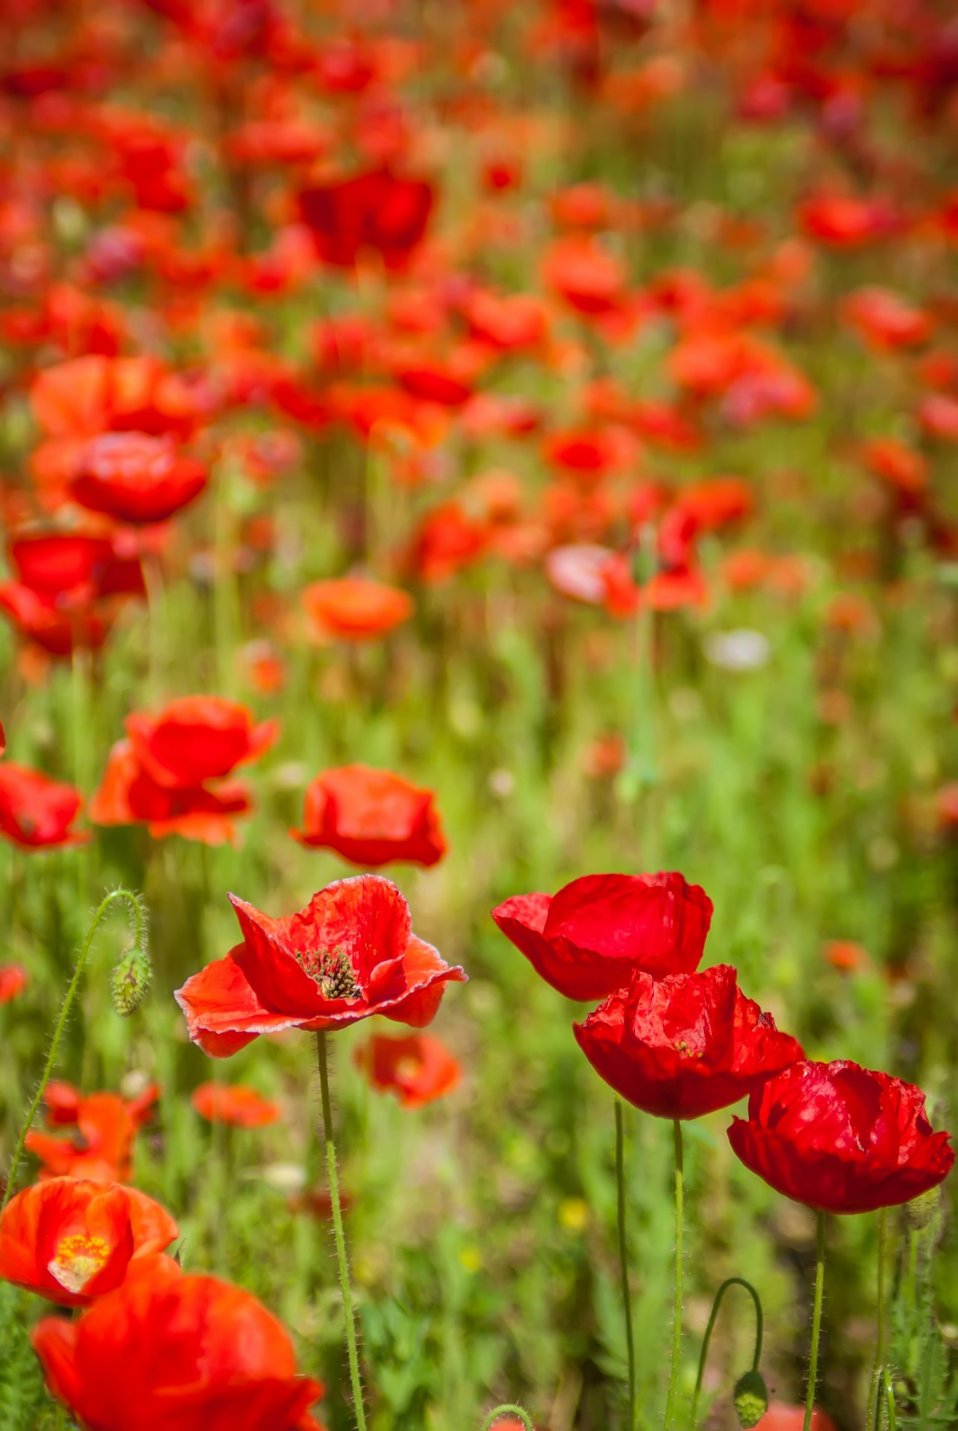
Red poppy field.